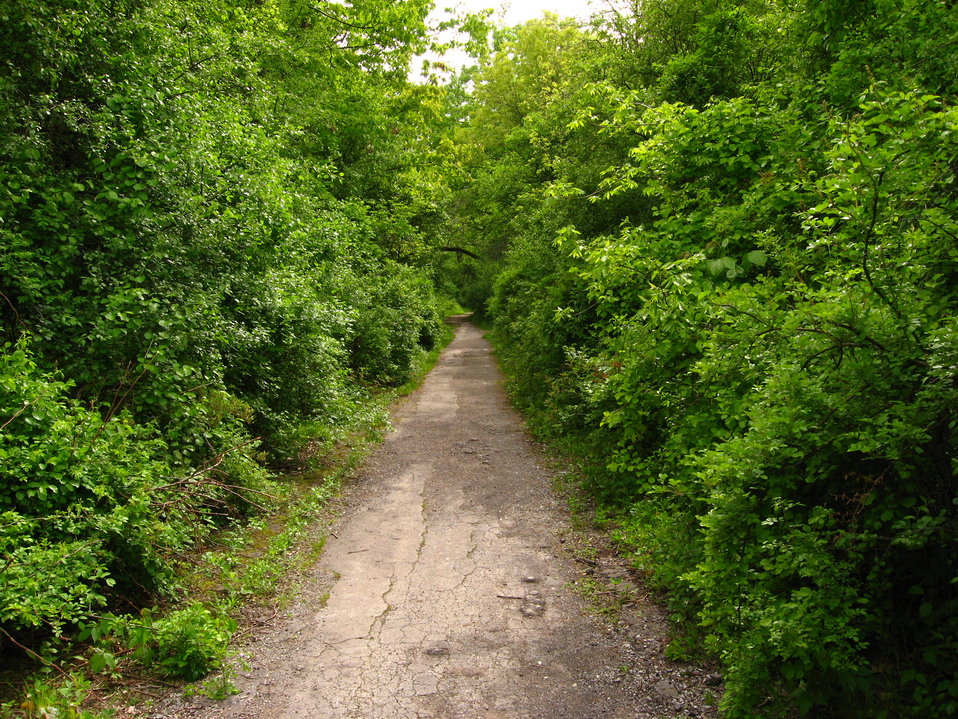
Bachelors Grove Entrance